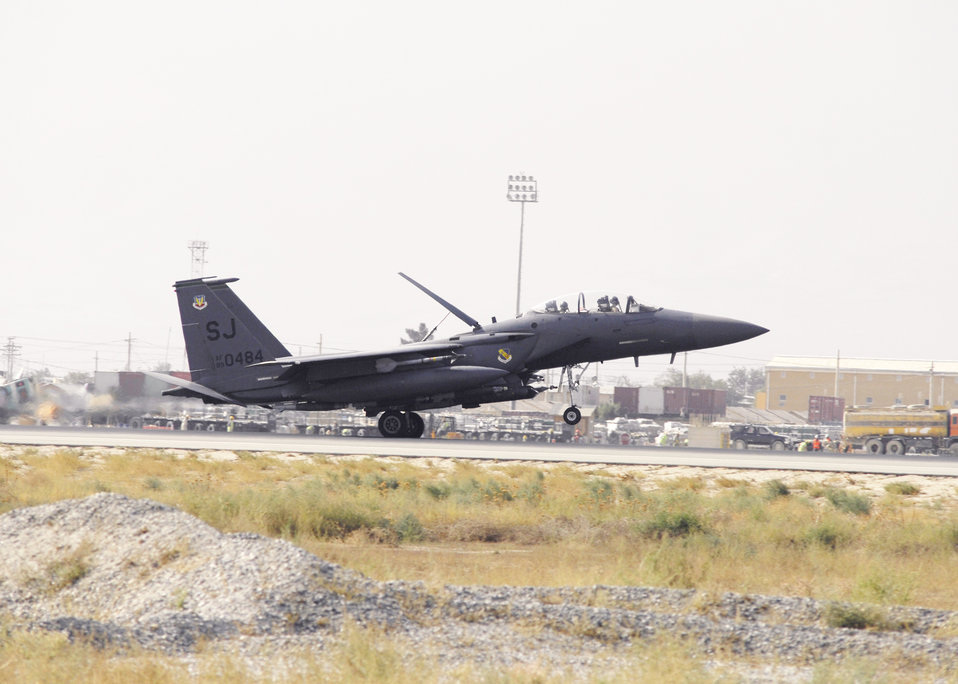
Airman comments about firefight

An F-15E Strike Eagle, like the one pictured here, battled insurgents at combat outposts Keating and Fritsche, where nearly 100 militants were killed by the combined response that included Afghan soldiers as well as U.S. air and ground units Oct. 3, 2009.